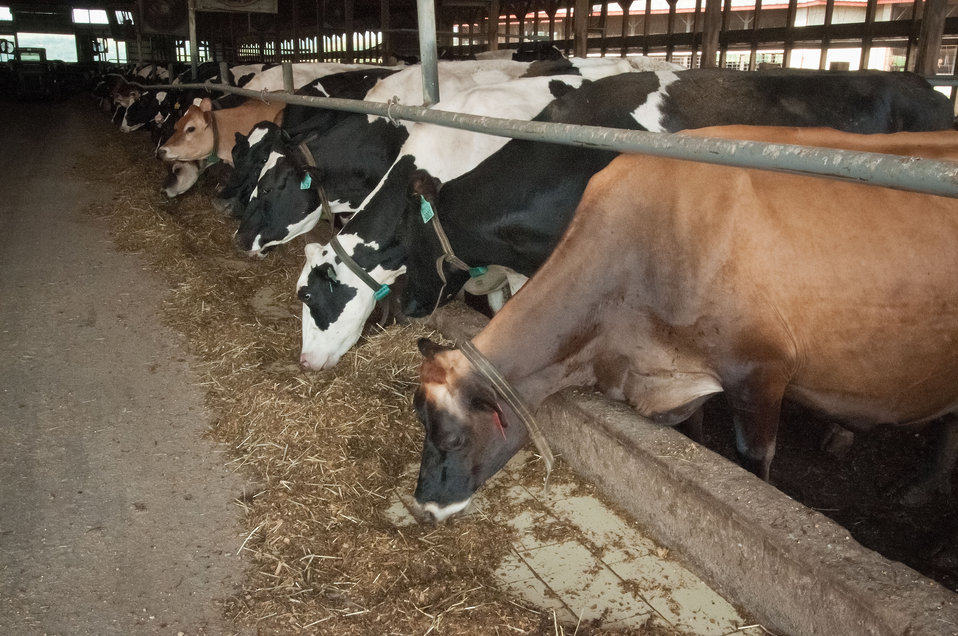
Holstein dairy cattle at Pennwood Dairy Farms owned and operated by the Stoltzfus family in Berlin, PA. The cattle produce the source material, manure, for the anaerobic digester the dairy uses to produce energy for the dairy. The digester produces one million kilowatt hours; half of the energy needs of the farm, the other five hundred thousand kilowatt hours are sold back to the grid. An anaerobic digester is a component of a waste management system that provides biological treatment in the absence of oxygen. The digester captures biogas for energy production, manages odors, reduces the net effect of greenhouse gas emissions, and reduces pathogens. The anaerobic digester practice is part of a planned conservation management system that manages manure and/or comprehensive nutrient management system. Agriculture Secretary Tom Vilsack visited the dairy on Tuesday, July 17, 2012. During his visit Secretary Vilsack highlighted the U.S. Department of Agriculture’s (USDA) energy efficiency programs and announced a new effort to help rural consumers make affordable, energy-efficient improvements to their homes and businesses.